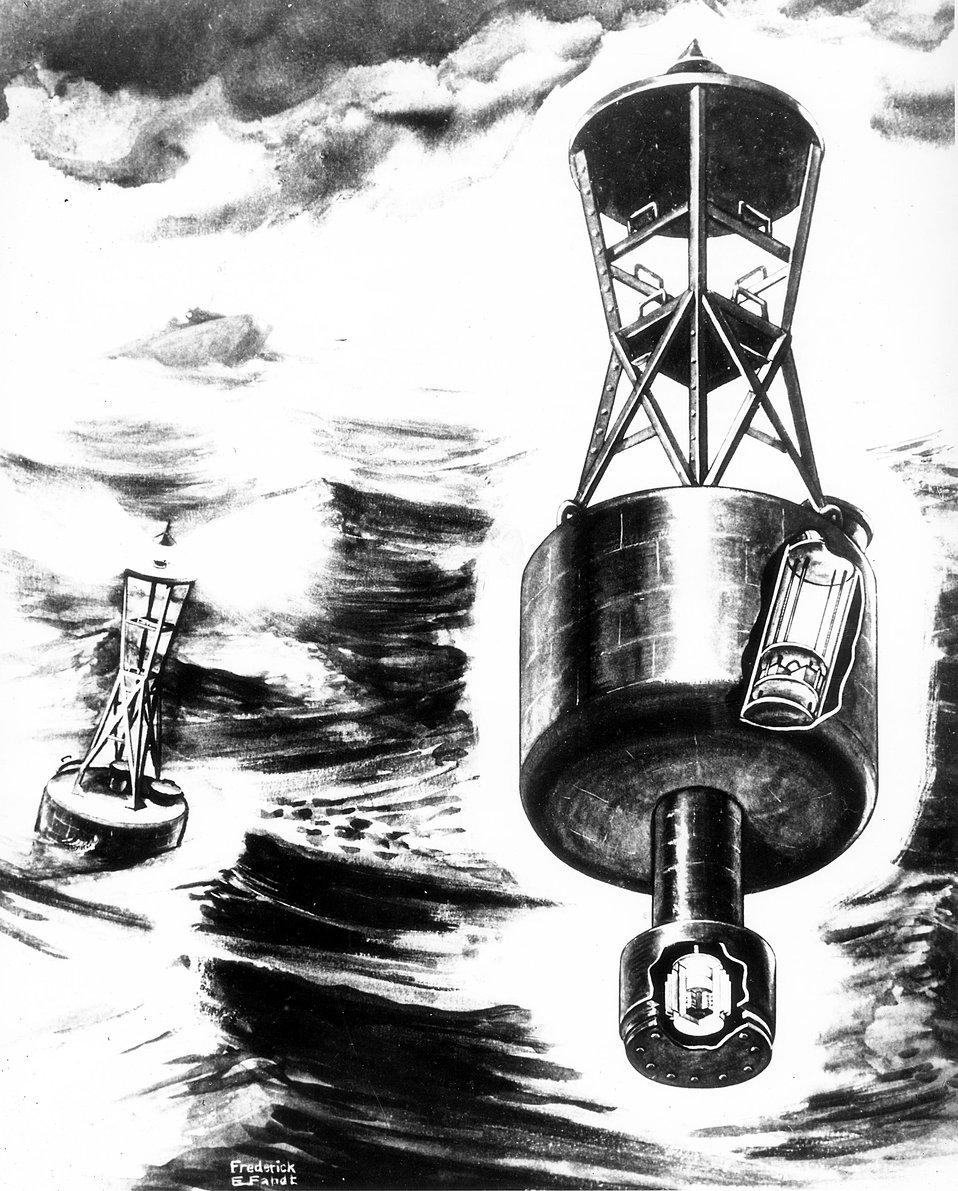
The world's first atomic-powered buoy is shown in this drawing.